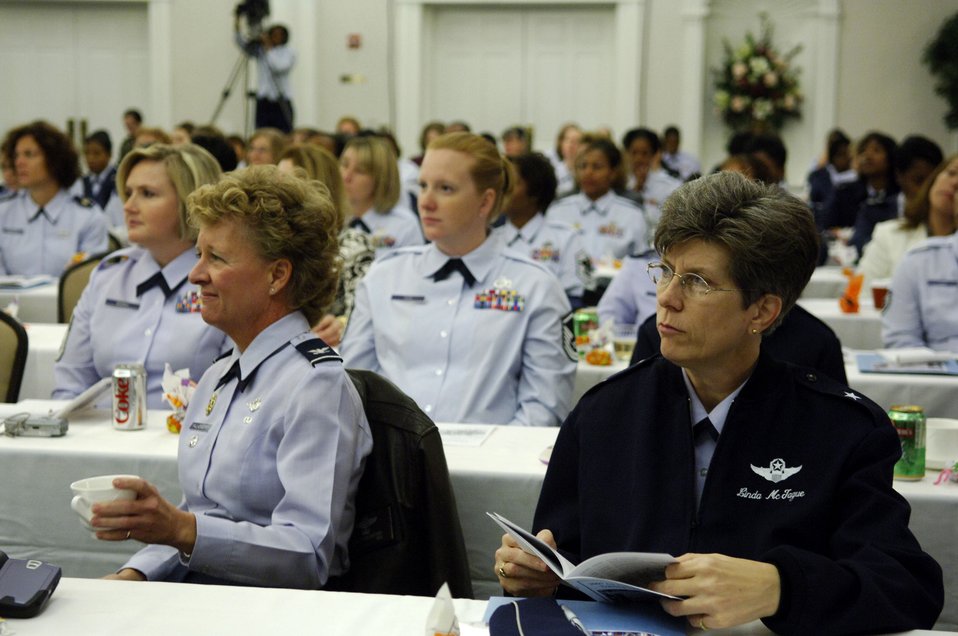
Captial Shield 2008

Air Force women of all ranks are in Springfield, Va., for the 2007 Air Force Heritage to Horizon Women's Training Symposium on Oct. 31. For the next three days, attendees will sit in on various forums and discussions, ranging in topics from professional development to women in combat. Guest speakers include both retired and active-duty Air Force women.